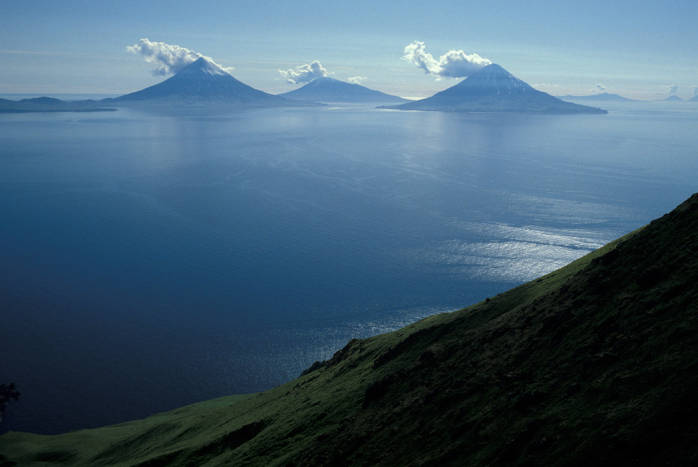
Islands of the Four Mountains

Alaska Maritime National Wildlife Refuge, AK
Photo: Red Bailey, USFWS
When Pres. William Howard Taft protected AK's Aleutian Islands by executive order in 1913, they became the nation's largest wildlife refuge up to that time, with 2.7 million acres. Today most of the islands are part of the Alaska Maritime National Wildlife Refuge.